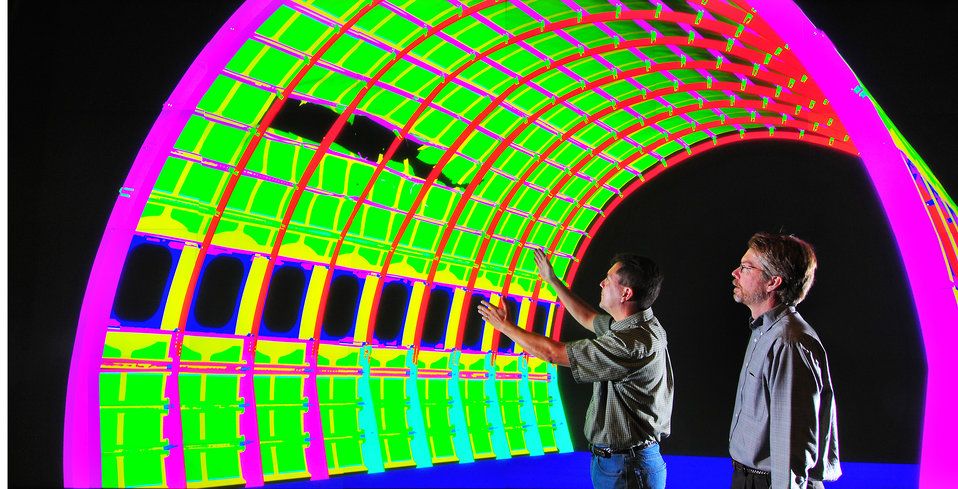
SANDIA RESEARCHERS JEFF GRUDA AND JIM PHELAN USE SNL'S VISUALIZATION LAB TO EXAMINE THE RESULTS OF A COMPUTER SIMULATION THAT MODELS THE EFFECTS OF AN EXPLOSION ON AN AIRCRAFT FUSELAGE.

The simulation was conducted under the National Nuclear Security Administration's Advanced Simulation and Computing program for the Transportation Security Administration. The research is helping develop a scientific basis for aviation security explosive detection requirement.